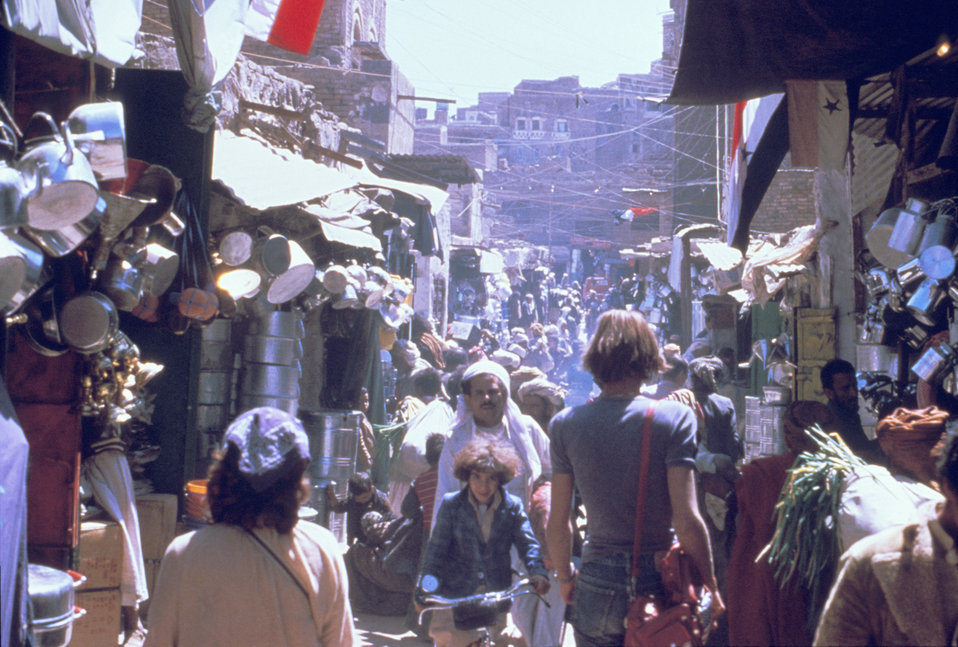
This photograph was taken during a foreign Epidemic Investigative Services (EIS) field study.